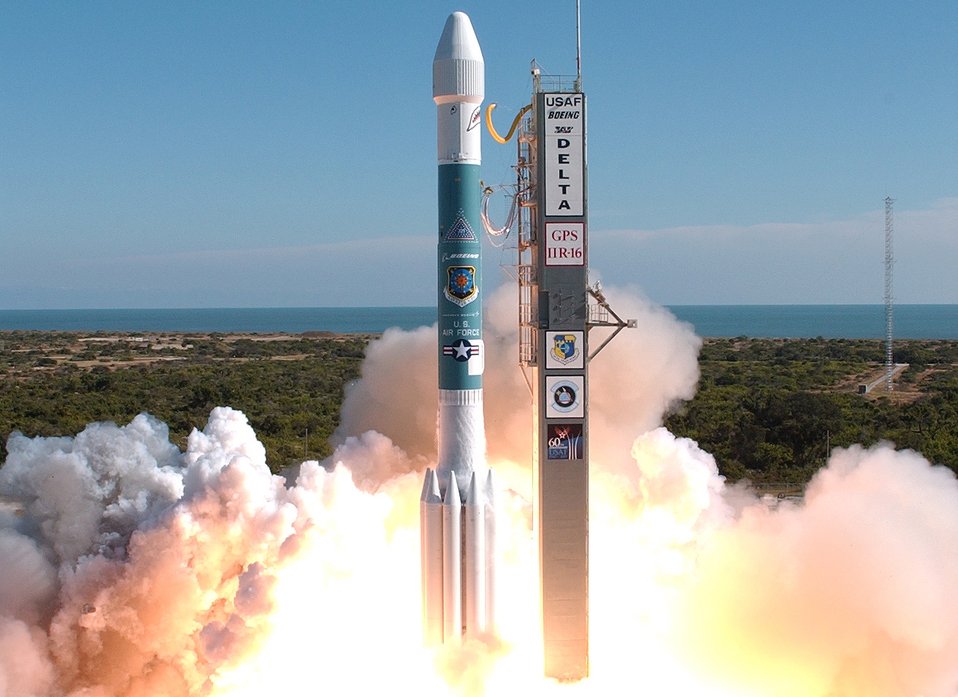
Delta II launch

An Air Force Delta II booster successfully launches from Cape Canveral, Fla. Nov. 17. The joint government and industry launch was carrying the NAVSTAR Global Positioning System satellite. The satellite launched is the third of the modernized GPS satellites that incorporates various improvements that will provide greater accuracy, increased resistance to interference and enhanced performance for users.